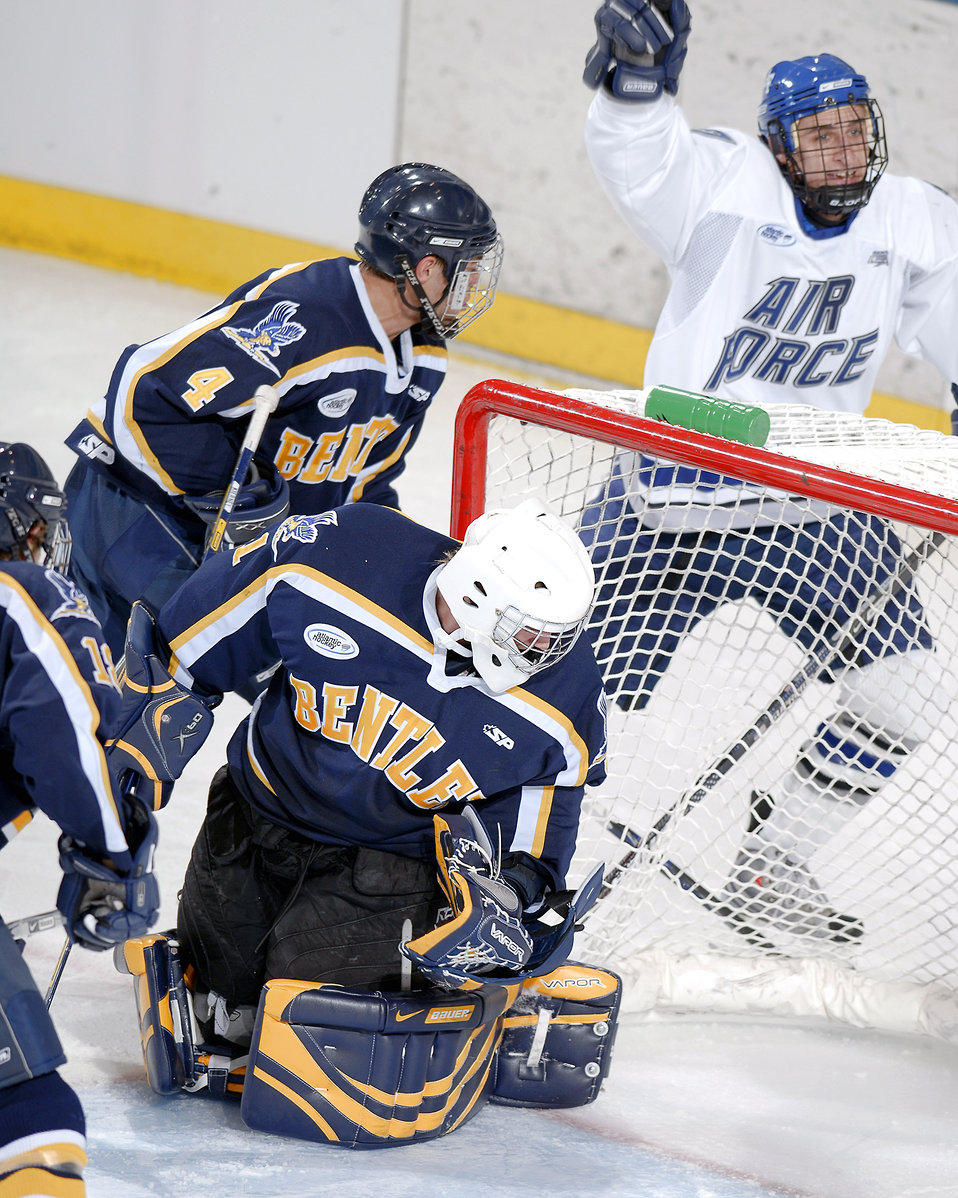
Air Force remains perfect at 8-0

Air Force Academy forward Blake Page celebrates after scoring a goal as Air Force defeated Bentley College 5-1 in an Atlantic Hockey Association game Oct. 31 at the Academy's Cadet Ice Arena in Colorado Springs, Colo. The next evening, the Academy skaters defeated Bentley 8-2, giving them a perfect 8-0 start, which ties a school record set in 1971-72. Air Force currently is ranked 14th in the nation.